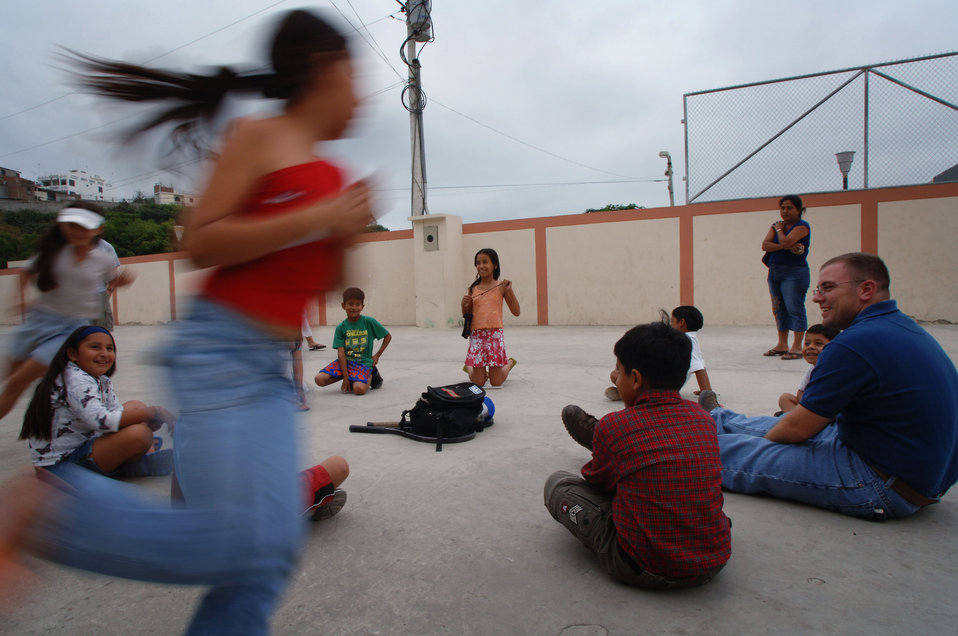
Airmen teach children English, show compassion

MANTA, Ecuador -- Capt. Chris Sheffield participates in a game of